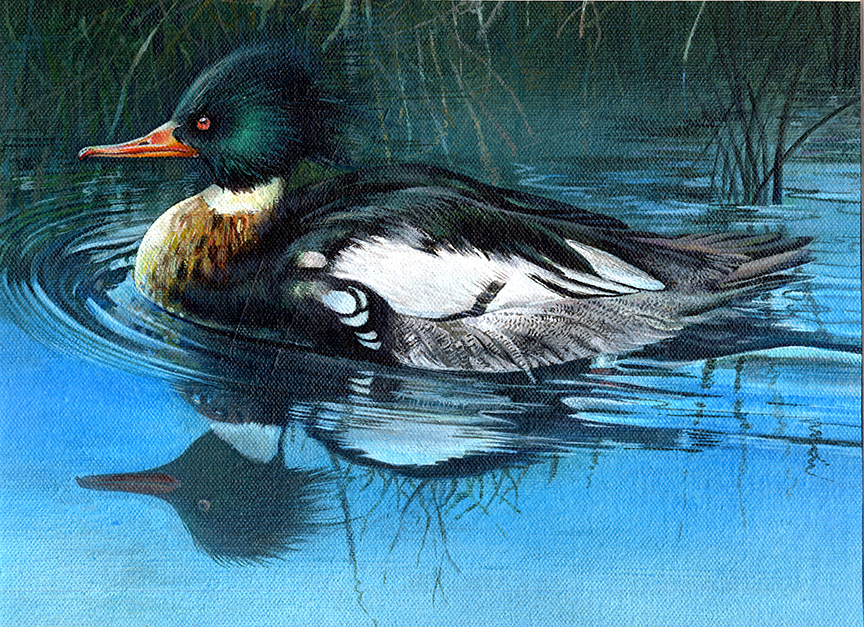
JRDuck2013NJ

2013 Junior Duck Stamp Best of Show-New Jersey